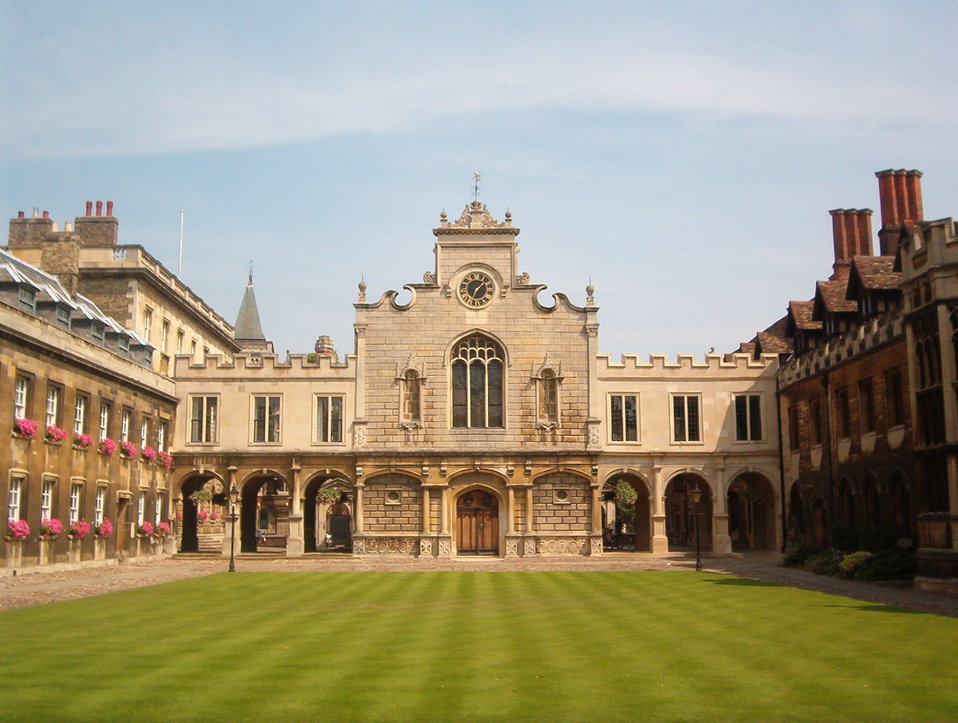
en:Peterhouse, Cambridge. A view of the chapel across Old Court. Photo by Azeira, August 2004.